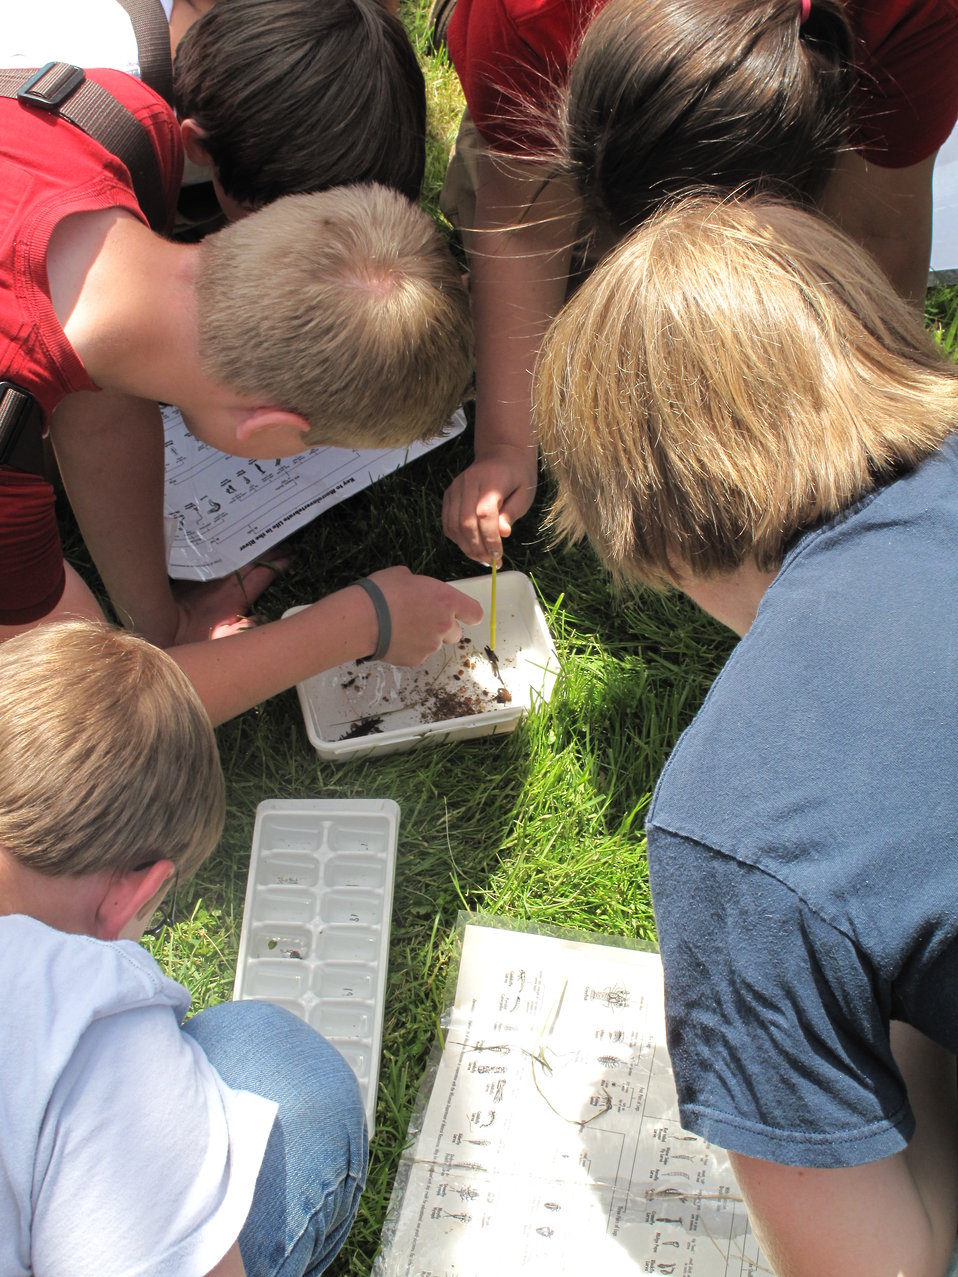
Students point out a caddisfly

Over the course of four days in late April 2014, every eighth grade student at North Carolina’s Macon Middle School, Highlands School, Nantahala School, and Trimont Christian Academy visited Cartoogechaye Park, in Macon County, to learn about rivers.

The students rotated through four stations:
1) water chemistry where they had the opportunity to help test water from Cartoogechaye Creek to gain an idea of the stream’s water quality;
2) aquatic insects, where students collected and identified animals like mayflies and caddisflies, learning how life in the river reflects the health of the river
3) fish, where they were able to collect and identify fish in the stream, and then
4) stream flow, where they measured and calculated the downstream movement of water, including the velocity of the water and the total volume of water being moved per second.

The event was organized by the University of Georgia's Coweeta Long-Term Ecological Research (LTER) Program, which is based at the USFS Coweeta Hydrologic Laboratory. (coweeta.uga.edu/), with sizable support from the Land Trust for the Little Tennessee. Other supporters include the U.S. Fish and Wildlife Service, N.C. Natural Heritage Program, and N.C. Division of Water Resources.